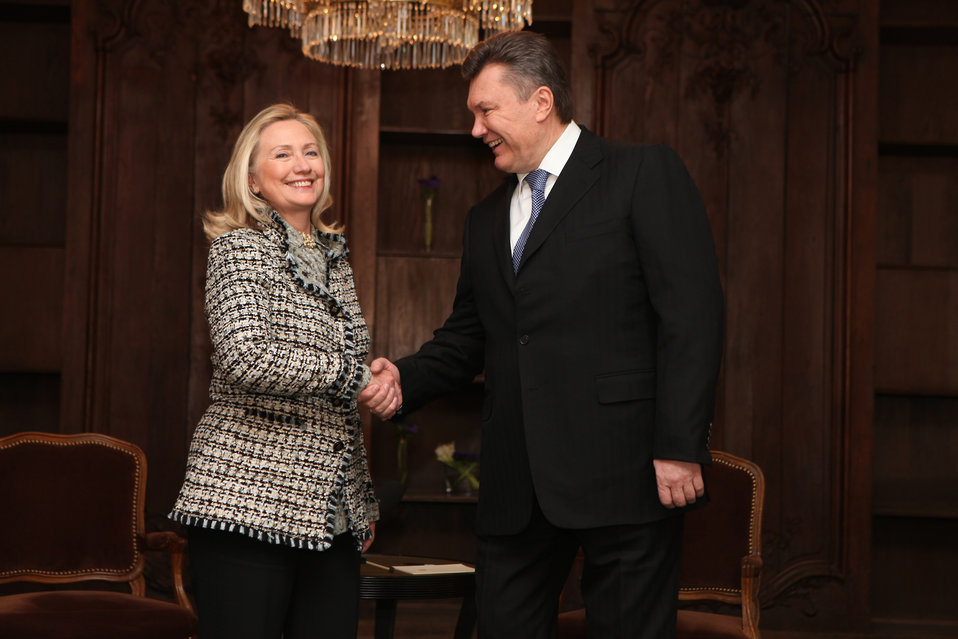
Secretary Clinton Meets With Ukrainian President Yanukovych

U.S. Secretary of State Hillary Rodham Clinton meets with Ukrainian President Viktor Yanukovych in Munich, Germany, on February 4, 2012.